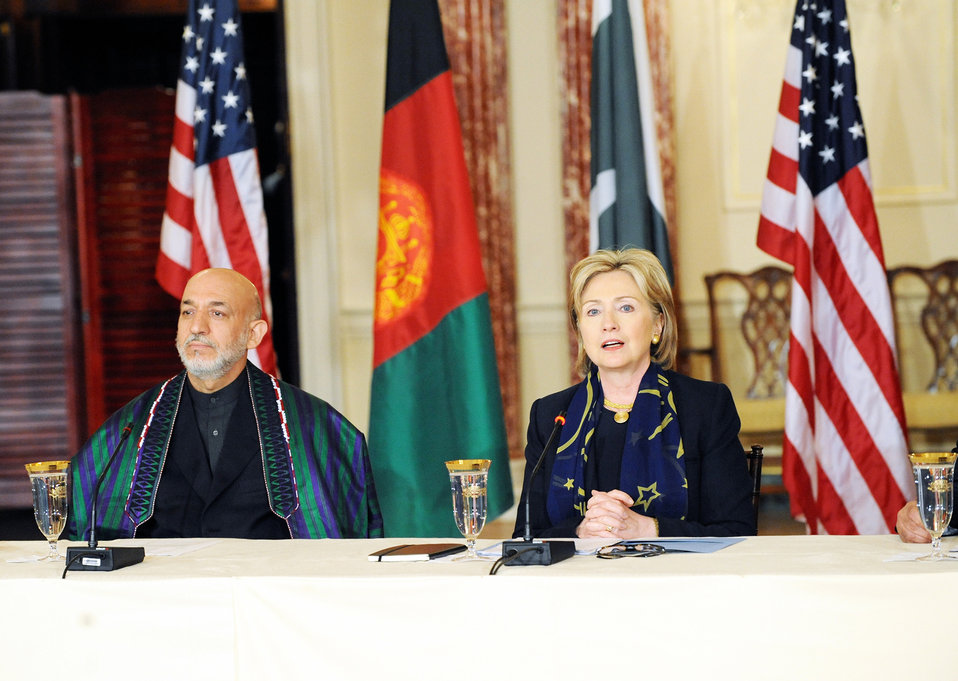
Trilateral Consultations With Afghanistan and Pakistan

U.S. Secretary of State Hillary Rodham Clinton provides remarks during talks with Afghan President Hamid Karzai
during trilateral consultations with Afghanistan and Pakistan at the U.S. Department of State in Washington, DC May 6, 2009.